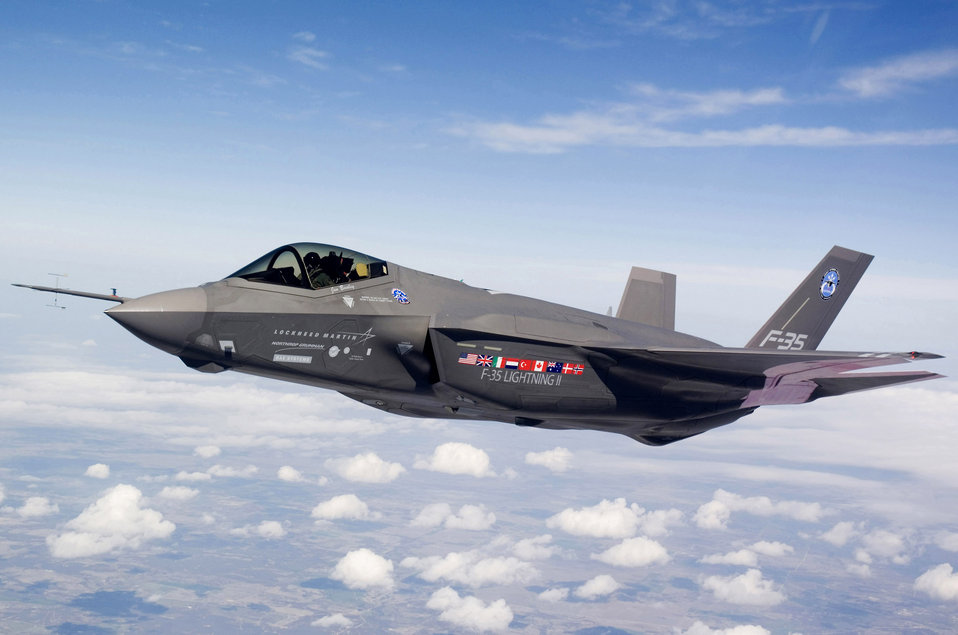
F-35 Record of Decision signed

Air Force officials have decided to bed down 59 F-35 Joint Strike Fighter aircraft and to allow associated construction to begin at Eglin Air Force Base, Fla. In this photo over Fort Worth, Texas, F-35 Lightning II test aircraft AA-1 undergoes a flight check.